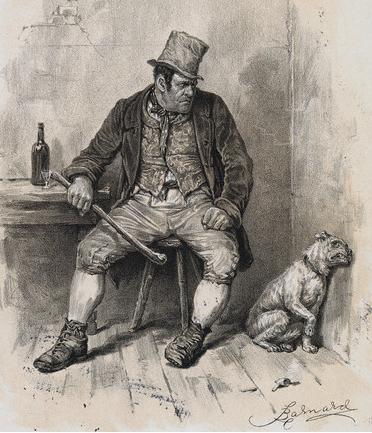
Reproduced from a c.1870s photogravure illustration to Charles Dickens's Oliver Twist